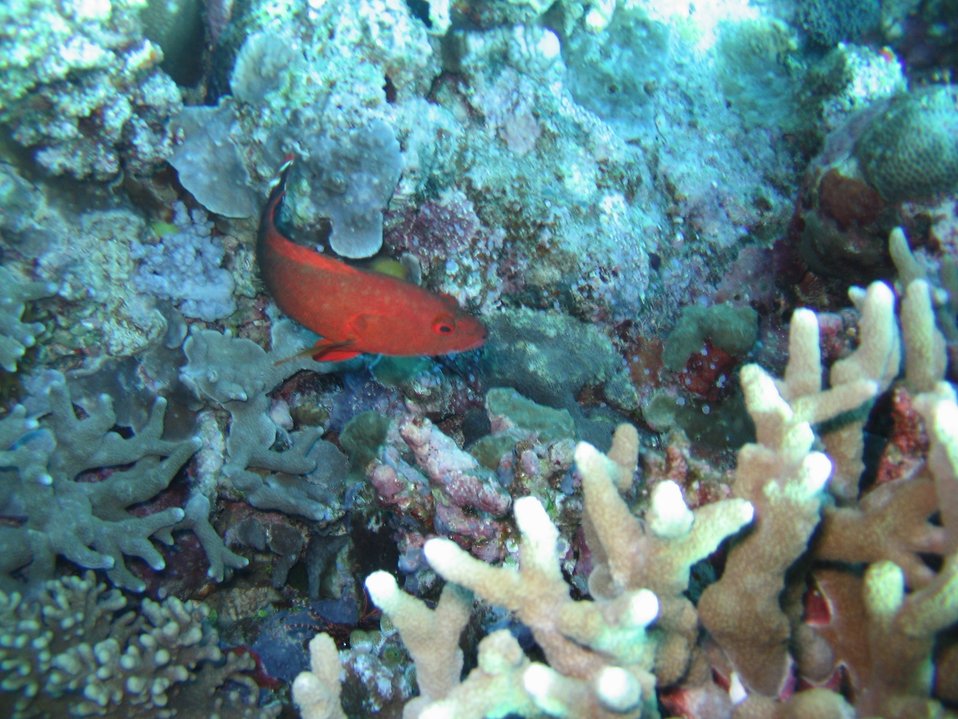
Unidentified red fish